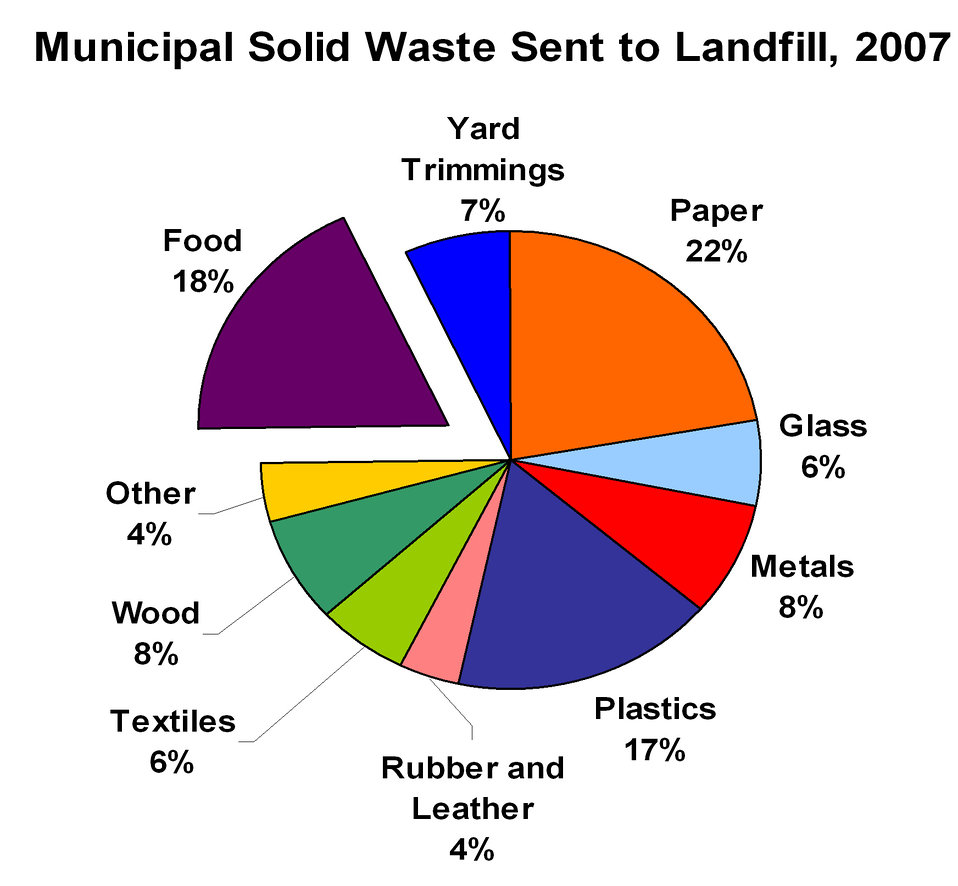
How Much Of Your Waste Is Food?

Food waste is the second largest category of municipal solid waste (MSW) in the United States, accounting for 21% of the waste stream (after recovery). That is over 30 million tons of food waste that the U. S. sends to the landfills each year.